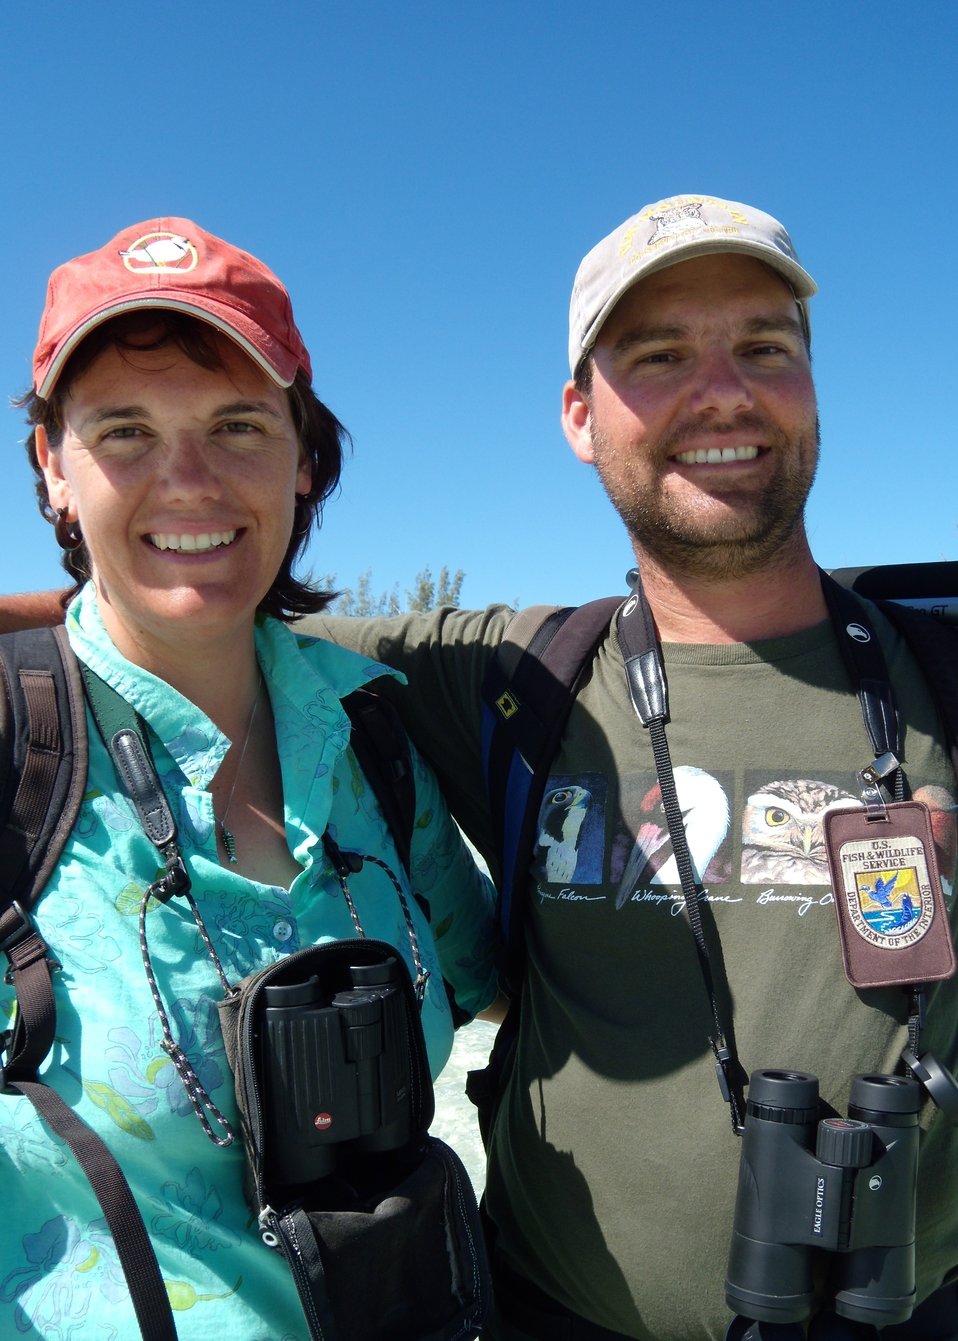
Sue Abbott and Caleb Spiegel

Working on New Providence Island.